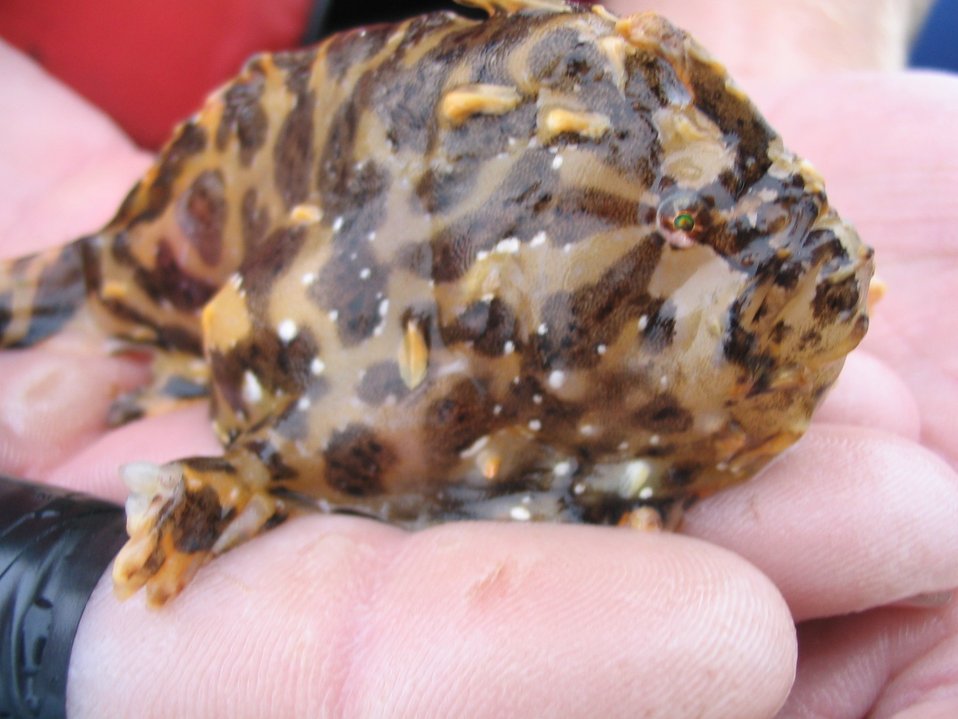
Small frog fish caught in surface seaweed.